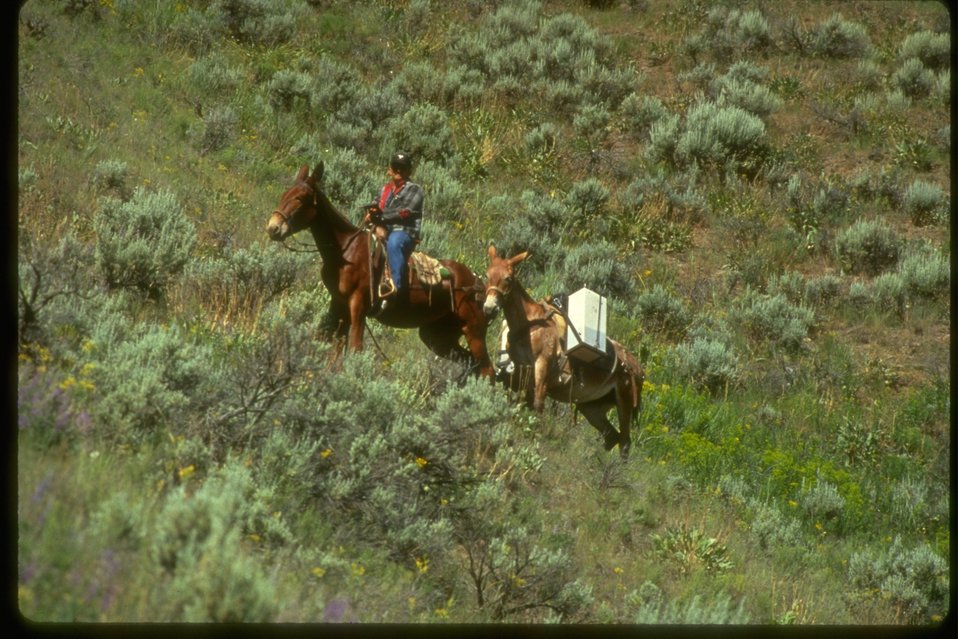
Man on horse with packhorse following.